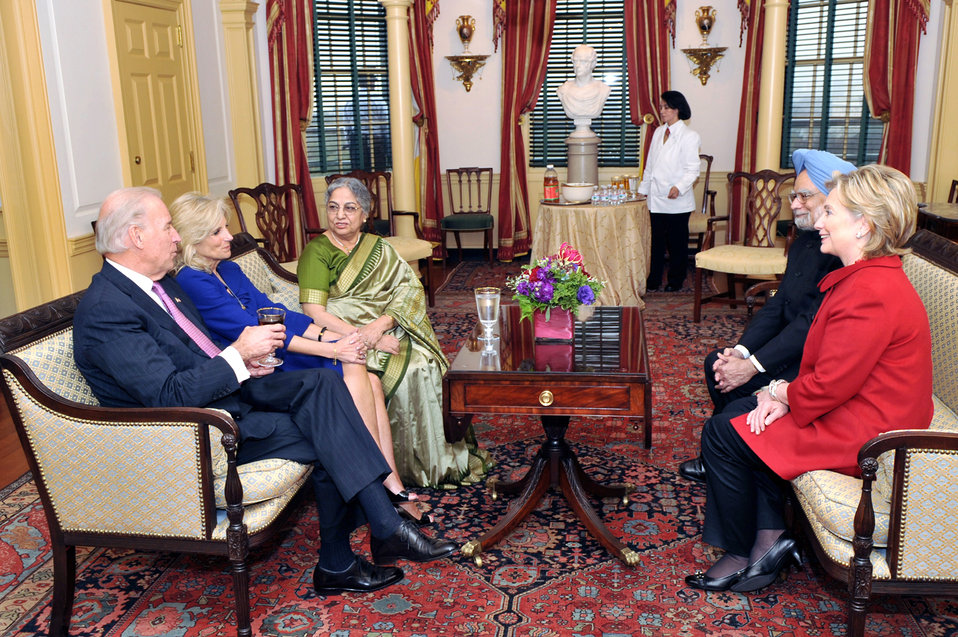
Vice-President Biden, Secretary Clinton Co-Host Social Lunch in Honor of Indian Prime Minister

U.S. Vice-President Joe Biden Dr. Jill Biden co-host a social lunch with U.S. Secretary of State Hillary Rodham Clinton in honor of Indian Prime Minister H.E. Dr. Manmohan Singh and Dr. Gurusharan Kaur at the U.S. Department of State in Washington, DC November 24, 2009.